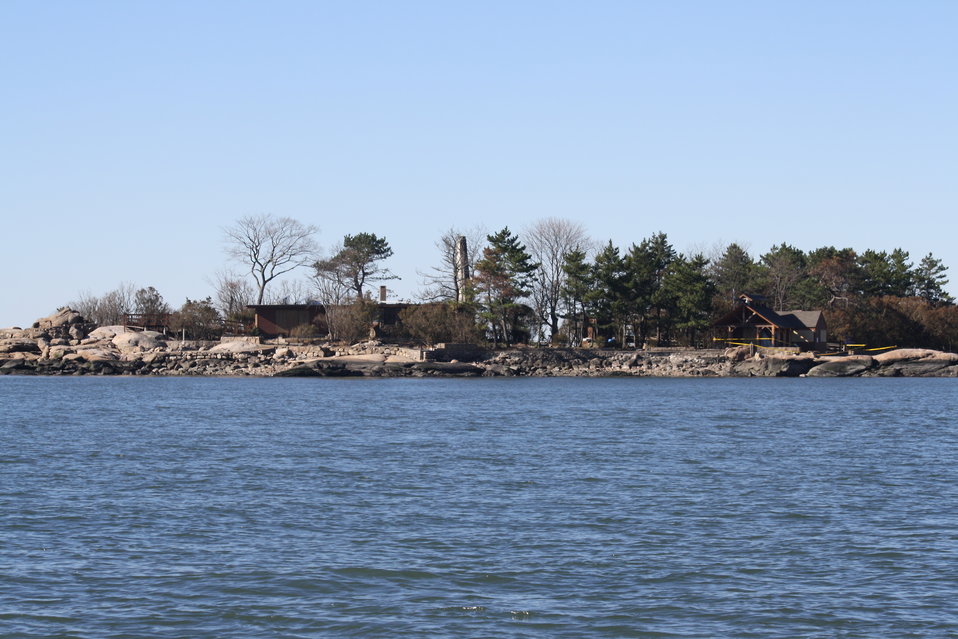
Stewart B. McKinney National Wildlife Refuge (CT)

Approaching Outer Island to begin repairs. After Hurricane Sandy, U.S. Fish and Wildlife Service staff and crews began to survey and asses damages to the refuge's nine island units.